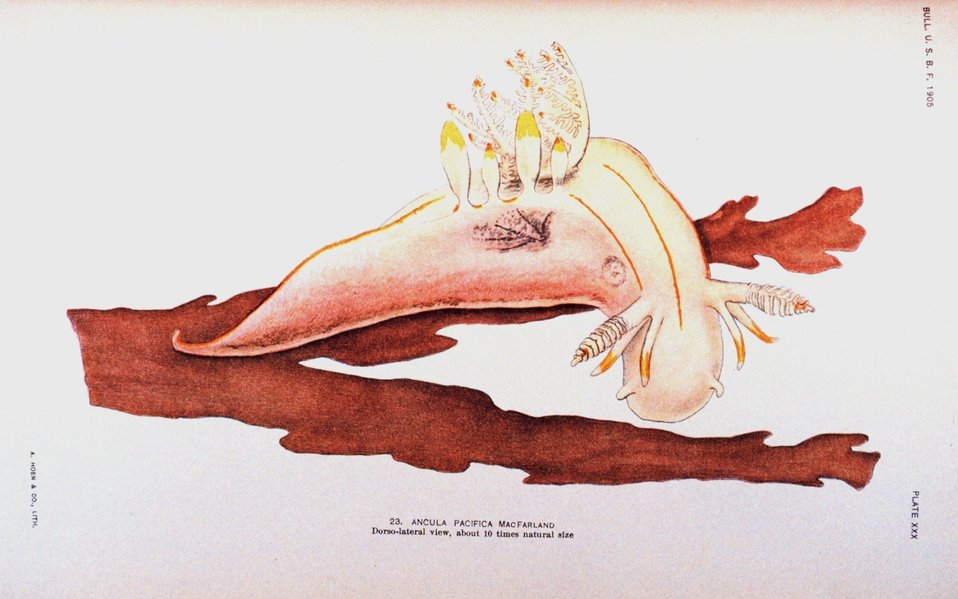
Nudibranch. 23. Ancula pacifica MacFarland - Dorso-lateral view. 23 painted by Anna B. Nash of the Hopkins Seaside Laboratory. In: 'Opisthobranchiate Mollusca from Monterey Bay ....', Bulletin of the Bureau of Fisheries, Volume 25, 1905. P. 151, Plate XXX.